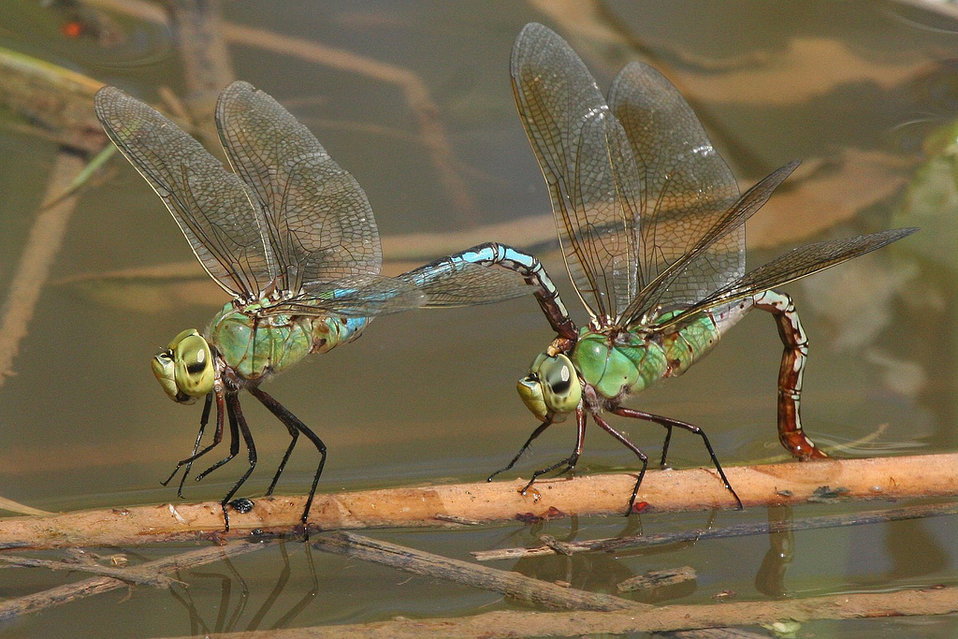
green darner dragonflies

Bosque del Apache National Wildlife Refuge, NM